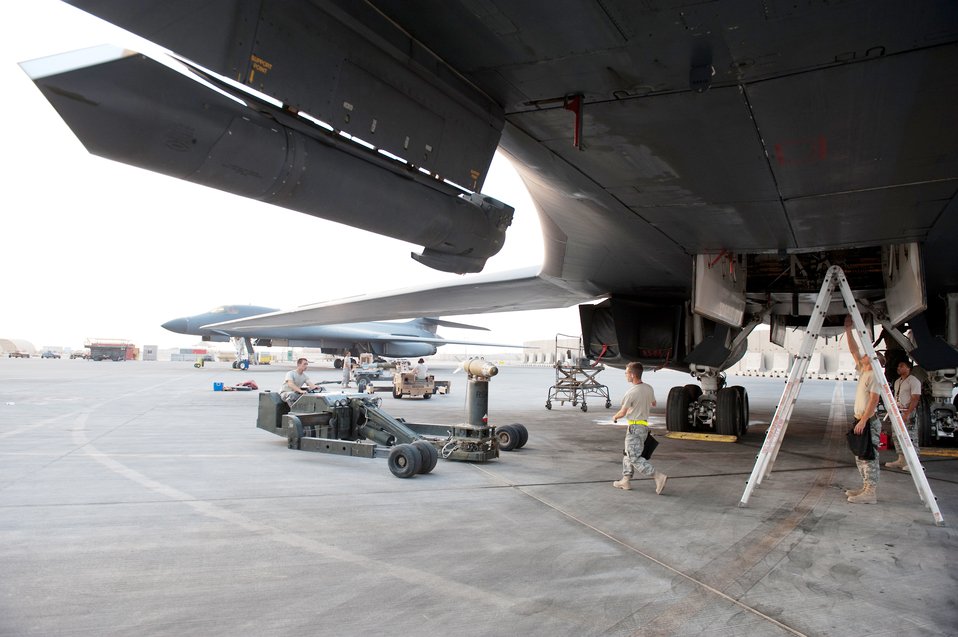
Checking out the B-1B for combat

Airmen with the 37th Aircraft Maintenance Unit load GBU-38s onto a B-1B Lancer Nov. 11, 2009, at an air base in Southwest Asia. Carrying the largest payload of guided and unguided weapons in the Air Force inventory, the multi-mission B-1 is the backbone of America's long-range bomber force. The Airmen are deployed from Ellsworth Air Force Base, S.D., in support of operations Iraqi Freedom and Enduring Freedom.